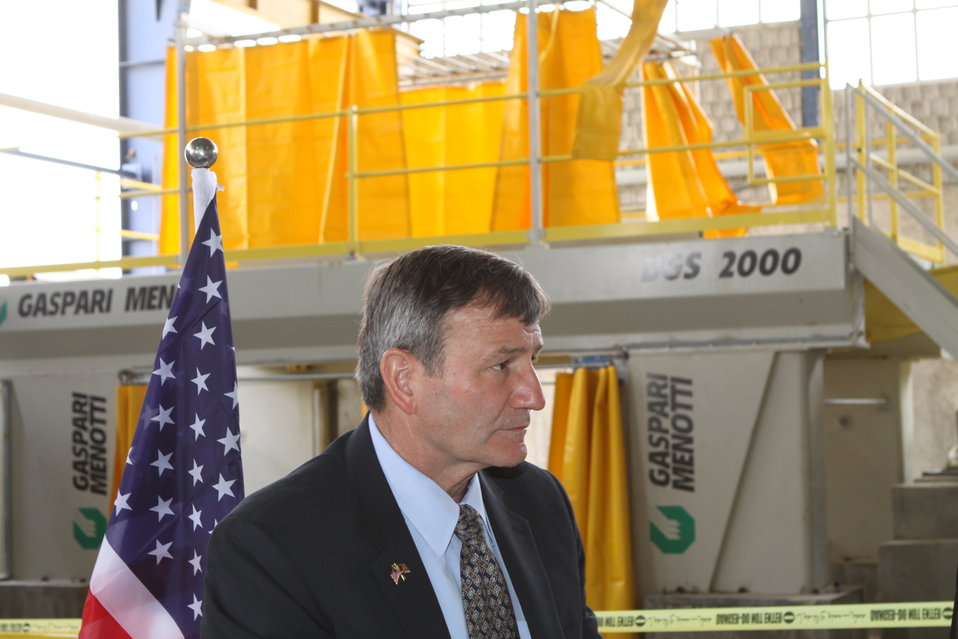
100525 Hirat Marble Conference 299